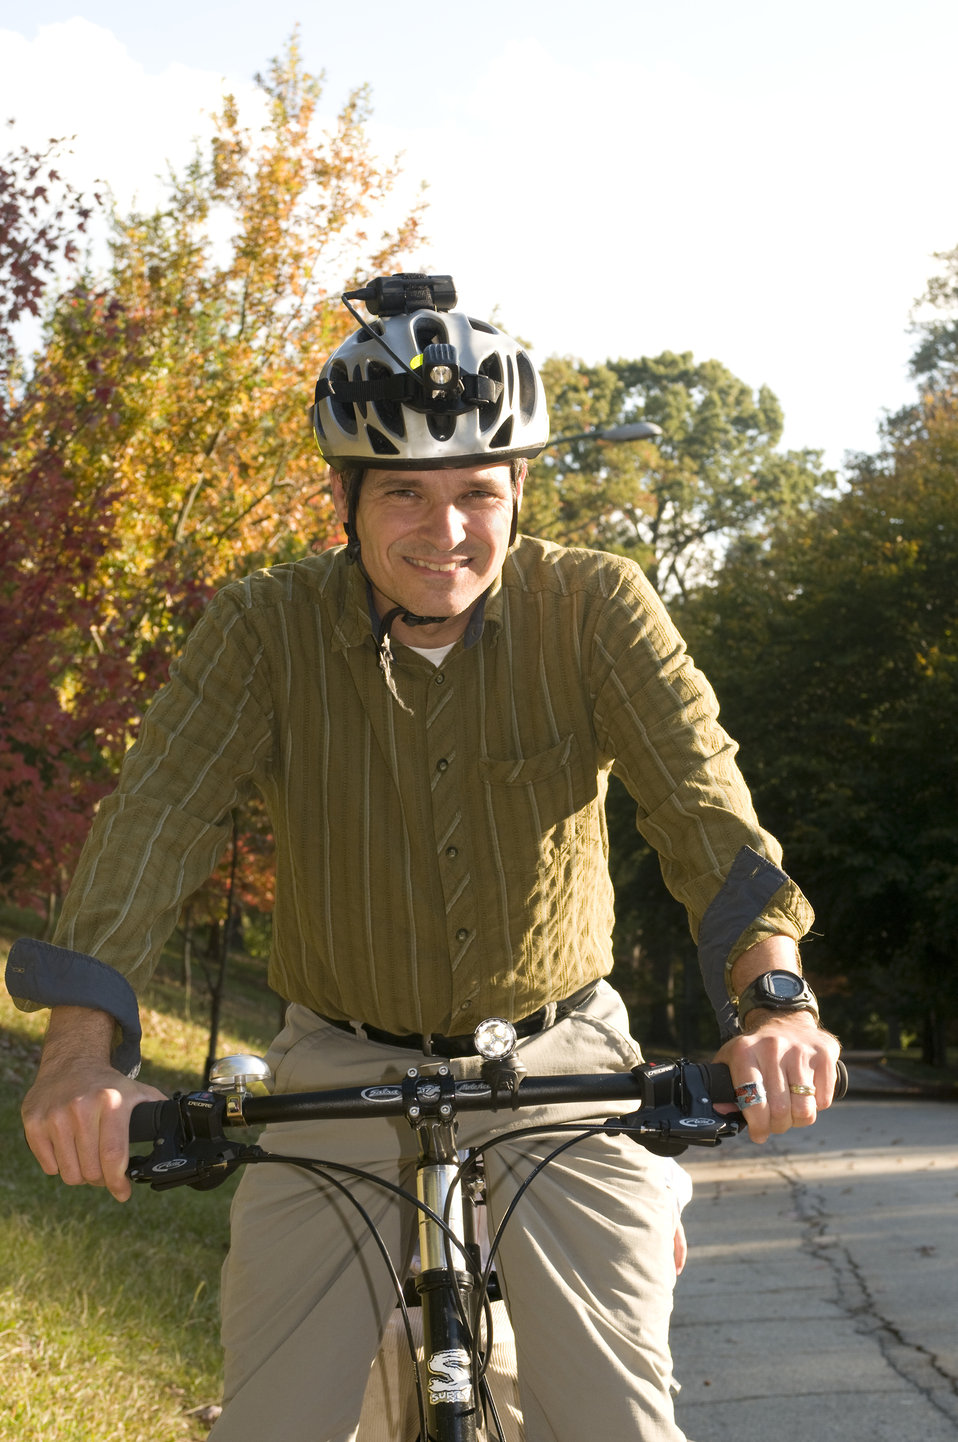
This male bicyclist was spending some time on a beautiful Georgian day, getting some exercise by bicycling on a quite, bike-friendly roadway. He was wearing an aerodynamic helmet, which is a must as a safe cyclist. However, what would have made this an even safer trip, would have been the inclusion of some brightly-colored outerwear, making him even more visible to oncoming drivers.